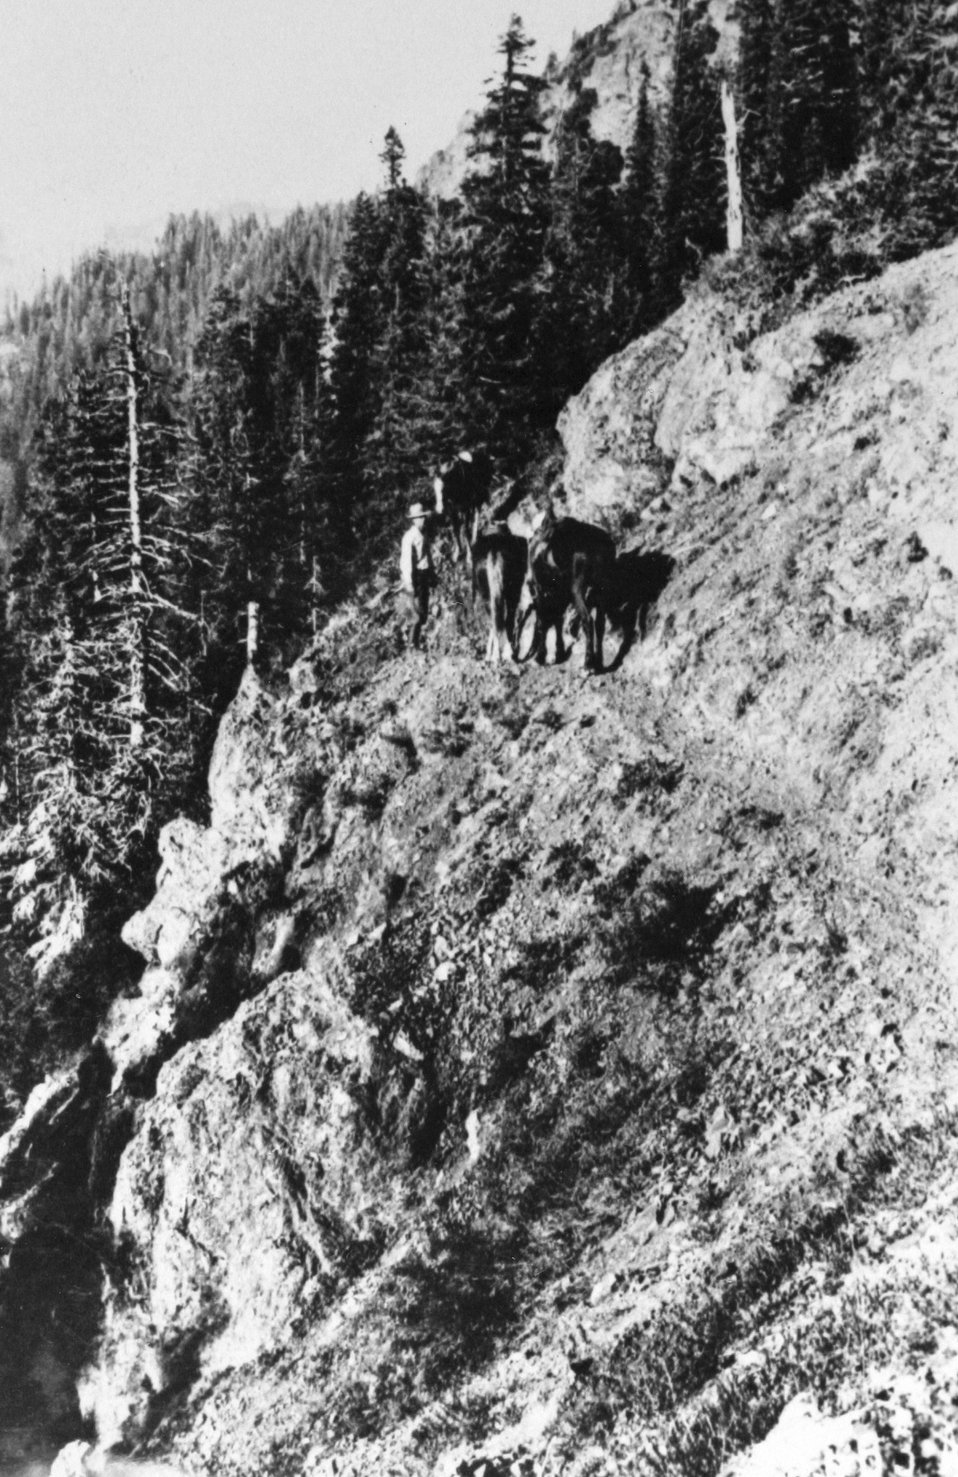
Rogue River Trail